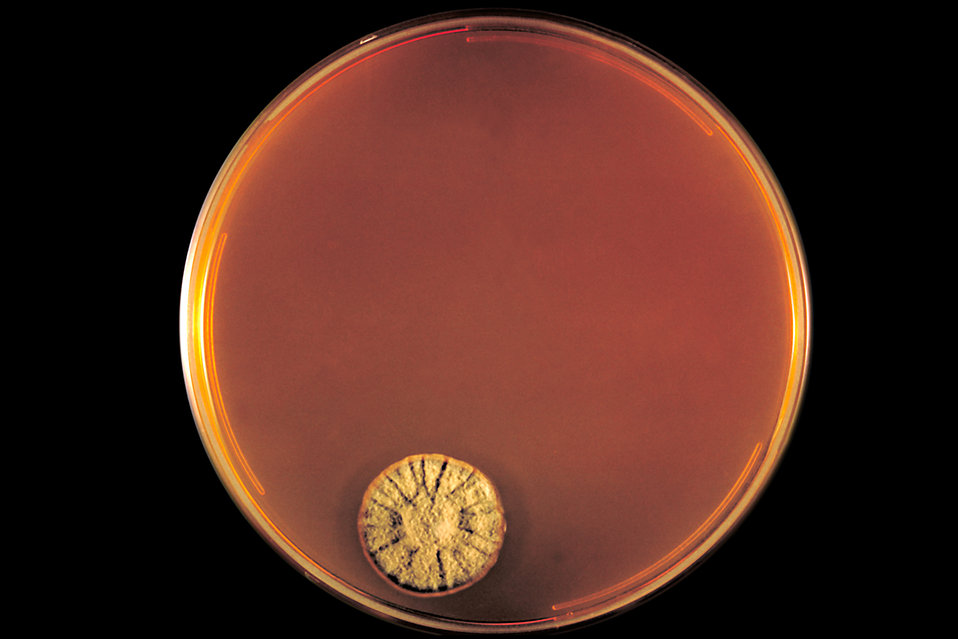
This was a DTM (Dermatophyte Test Medium) agar plate culture growing the fungus Trichophyton concentricum.